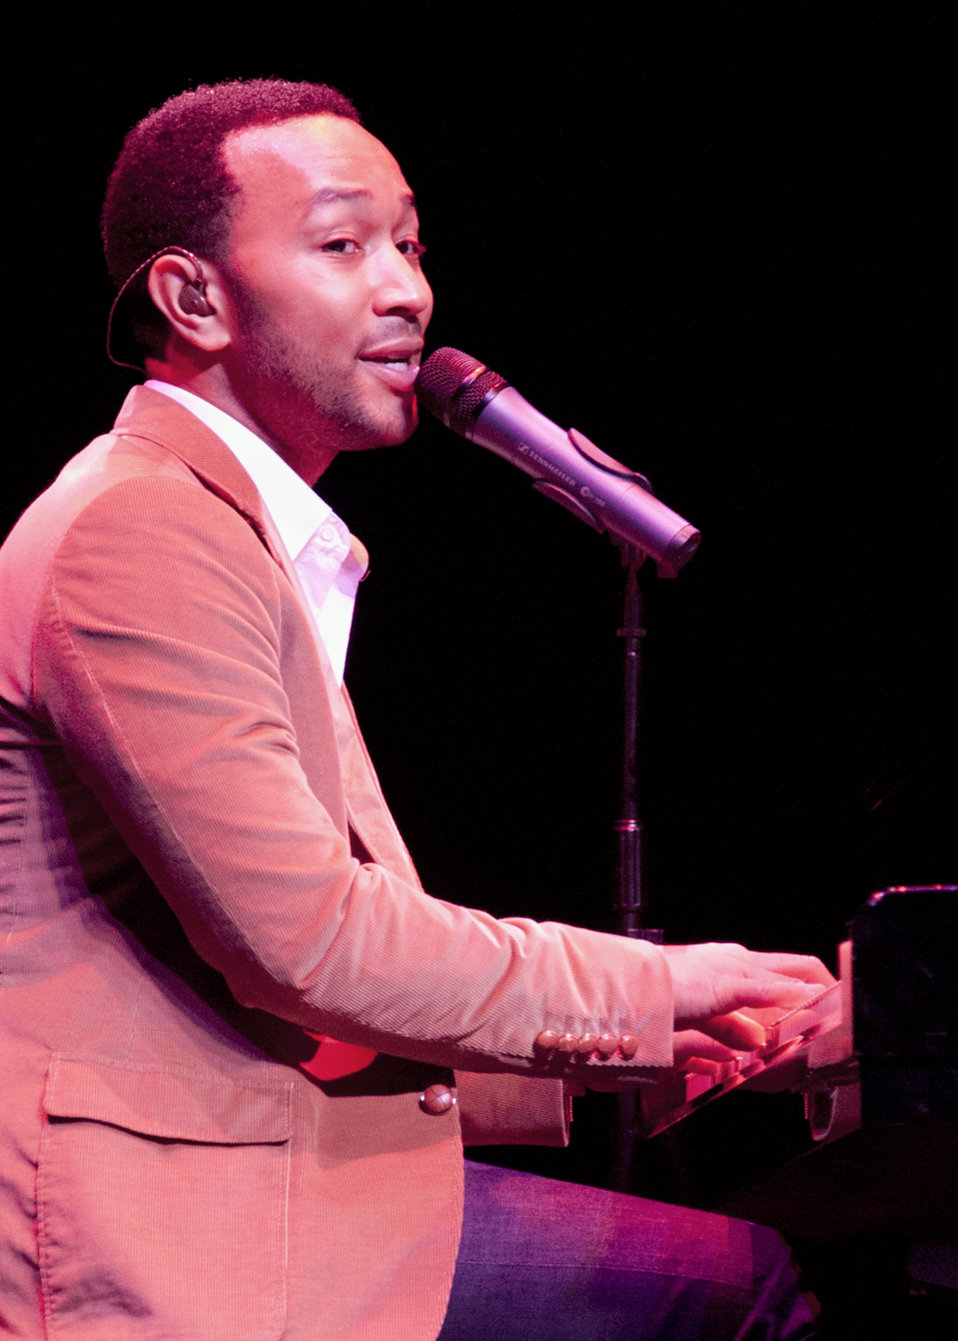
John Legend entertains troops in Florida

Six-time Grammy winning R & B singer John Legend entertained a crowd of more than 1,000 Nov. 14, 2010, in Niceville, Fla. The show was part of the Air Force Reserve's